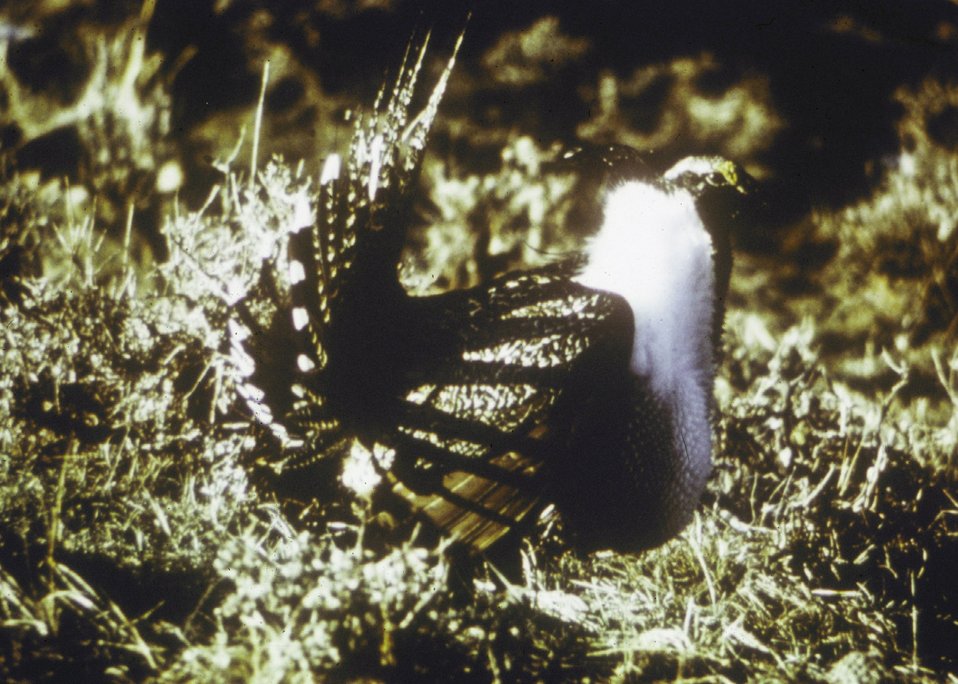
A strutting Sagegrouse cock.